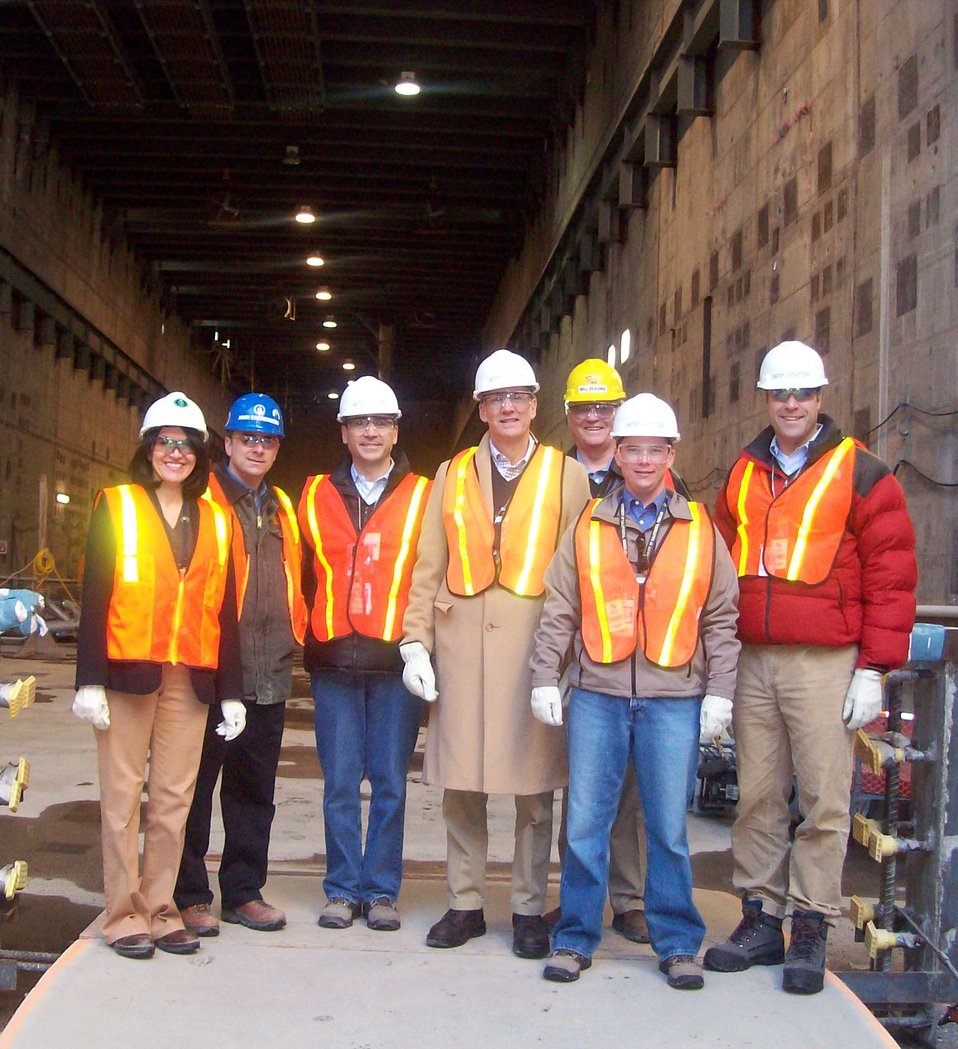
Albright group photo in PT